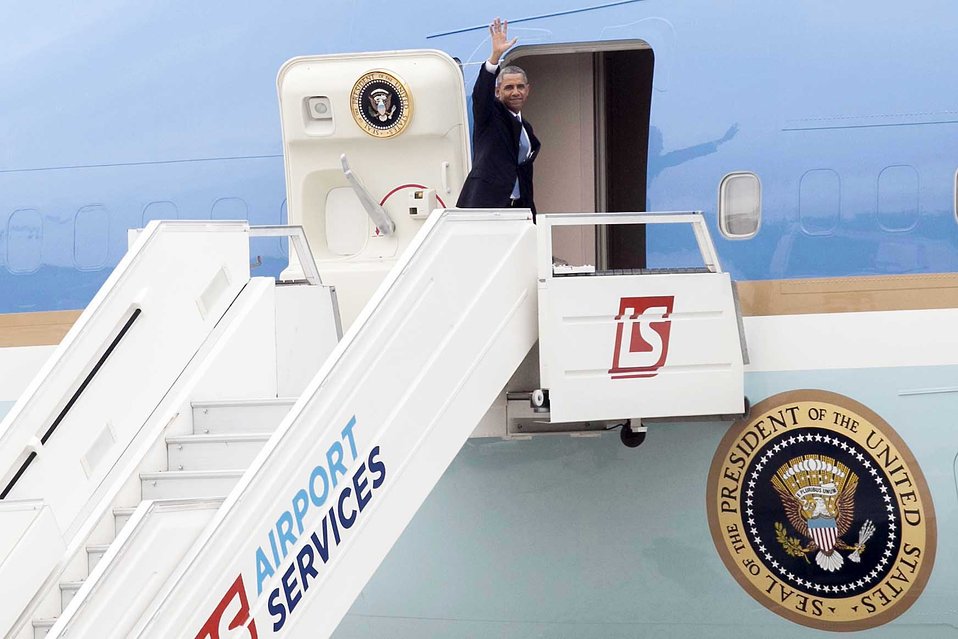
President Obama Bids Farewell to Warsaw

President Barack Obama waves as he boards Air Force One before departing Warsaw, Poland, to travel to Brussels, Belgium, on June 4, 2014. [U.S. Mission to Poland photo by Jakub Szymczuk]